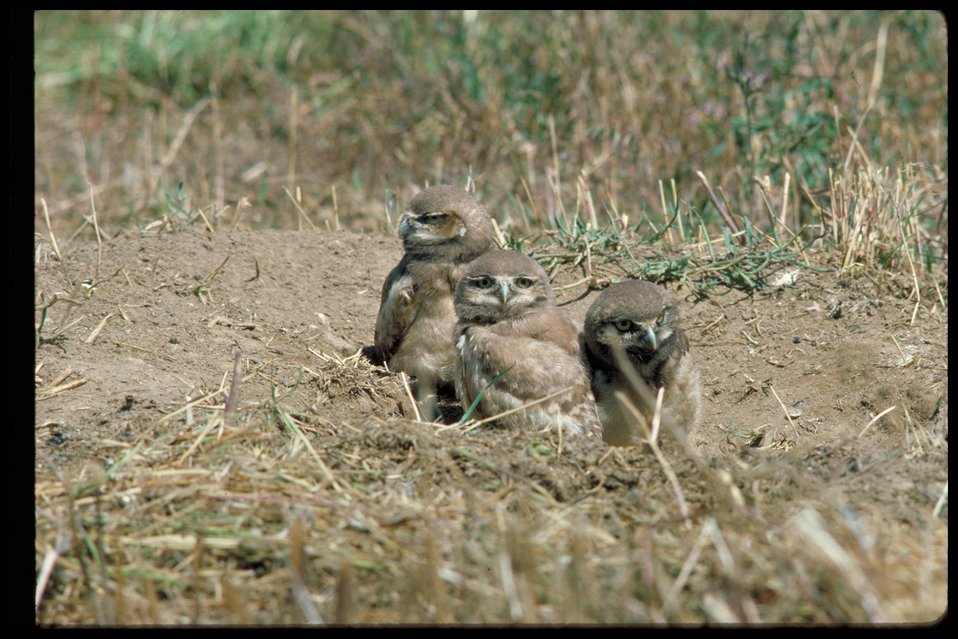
Birds of Prey National Conservation Area BOP Owyhee Field Office LSRD Lower Snake River District